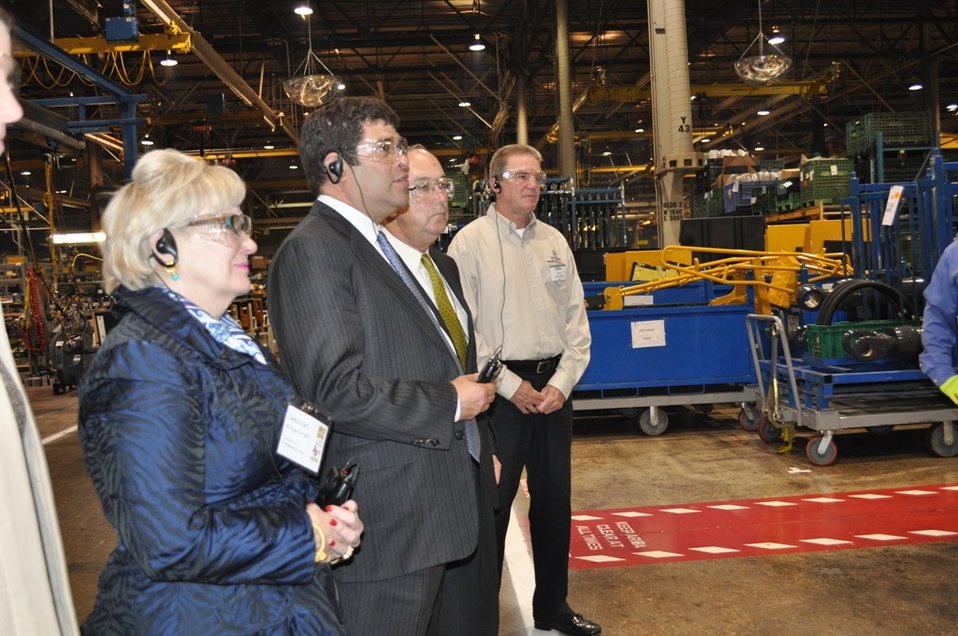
Deputy Secretary Neal Wolin visits Deere and Co.

President & CEO of the Council on Competitiveness Deborah Wince-Smith, Deputy Secretary Neal Wolin, Chairman and CEO of Deere and Co. Sam Allen, and President of UAW Local 281 Michael O'Brien met with workers at the John Deere Davenport Works Construction and Forestry Facility in Moline, IL.